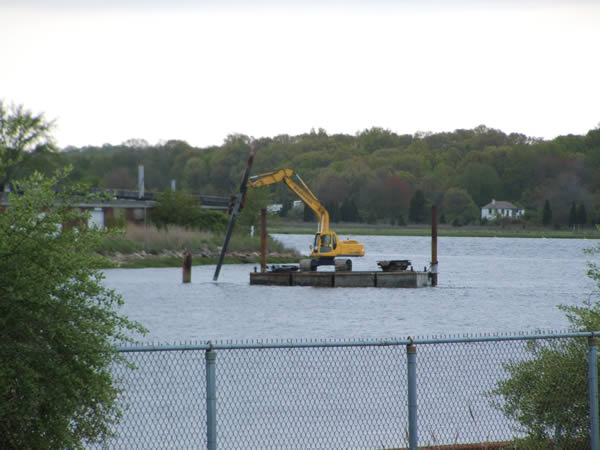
2009, Watching the sheet pile work from the New Bedford shoreline